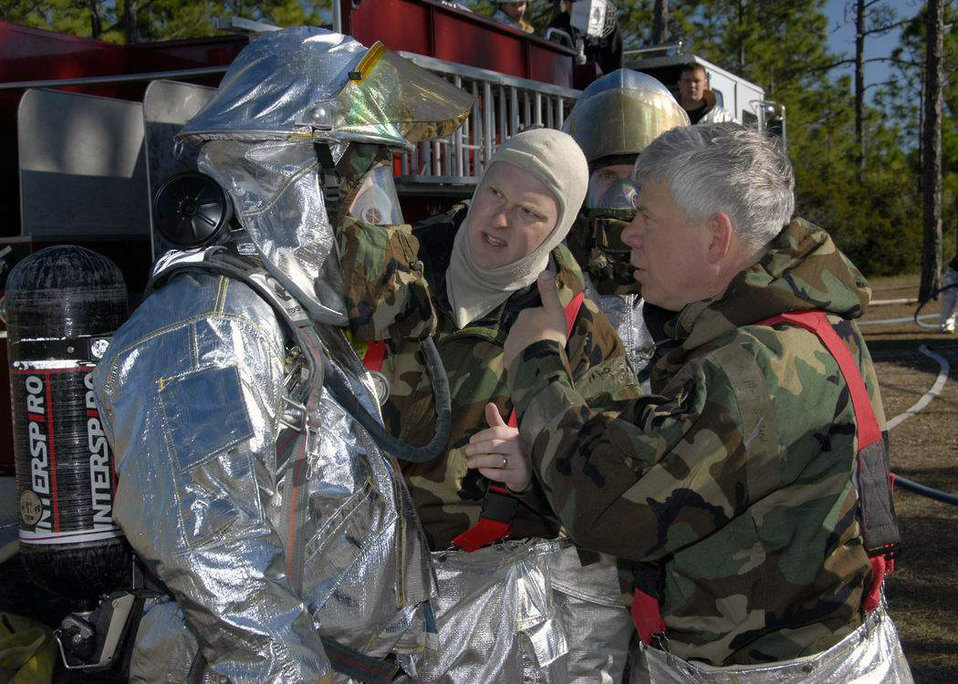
Succeeding at Silver Flag

Chief Master Sgt. Armand Lamour (right) and Master Sgt. Travis Raby (center) assist another firefighter with his fire suit prior to firefighter training conducted during a Silver Flag exercise Feb. 3. Silver Flag exercise is an annual training exercise conducted at Tyndall Air Force Base, Fla., to train military personnel within their perspective career field.